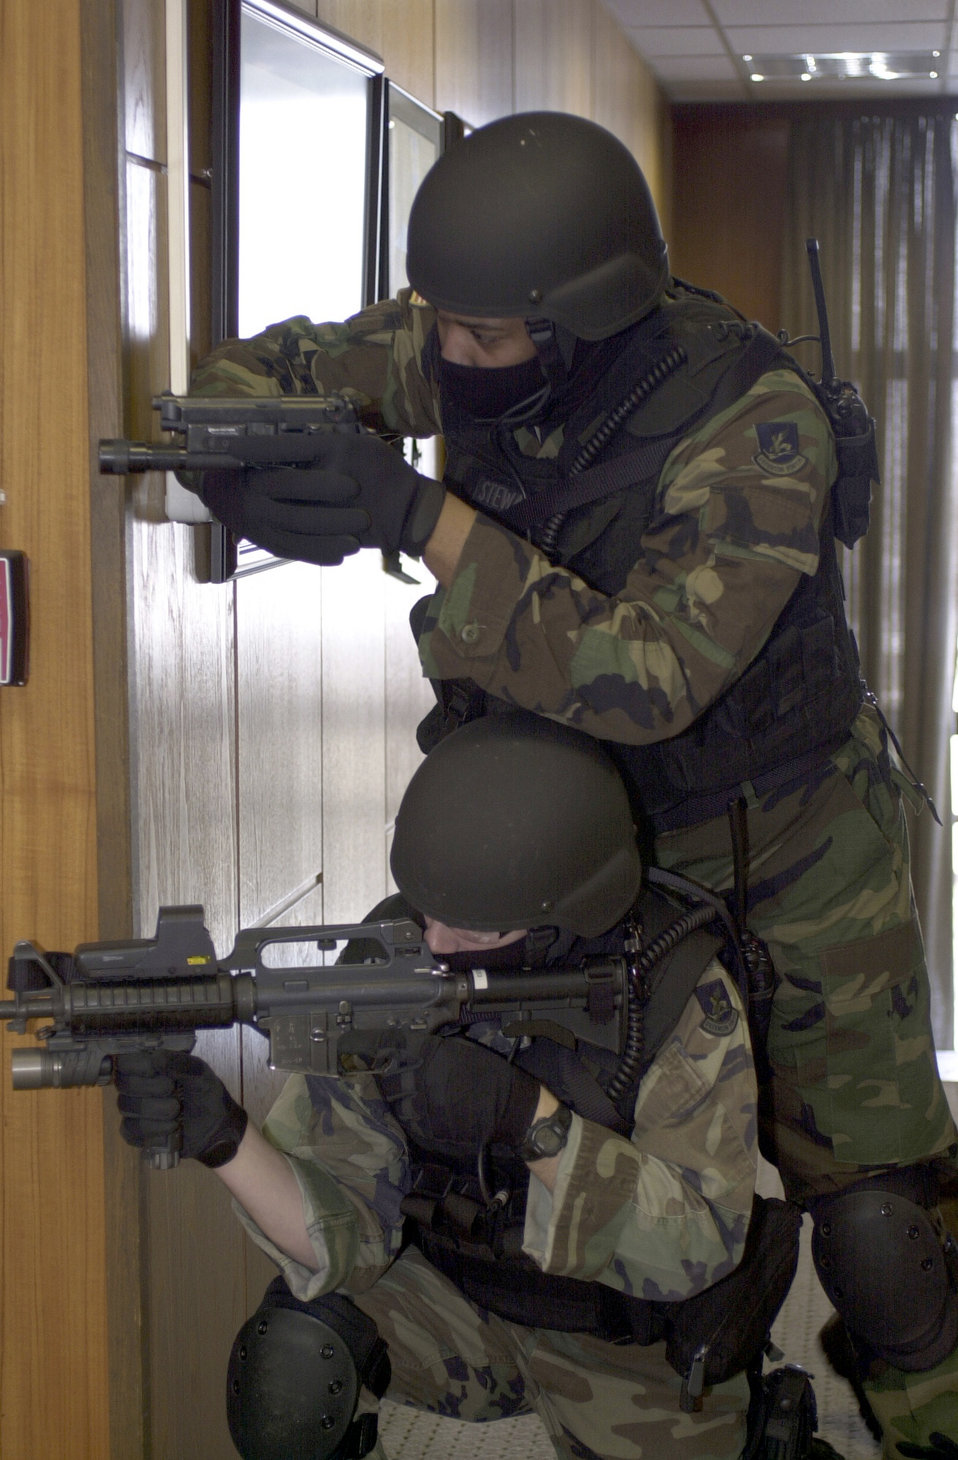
Got you covered

SPANGDAHLEM AIR BASE, Germany -- Members of the 52nd Security Forces Squadron emergency service team takes aim at a suspect who attempted to take their commander hostage during a Full Spectrum Threat Response Exercise here Feb. 26.